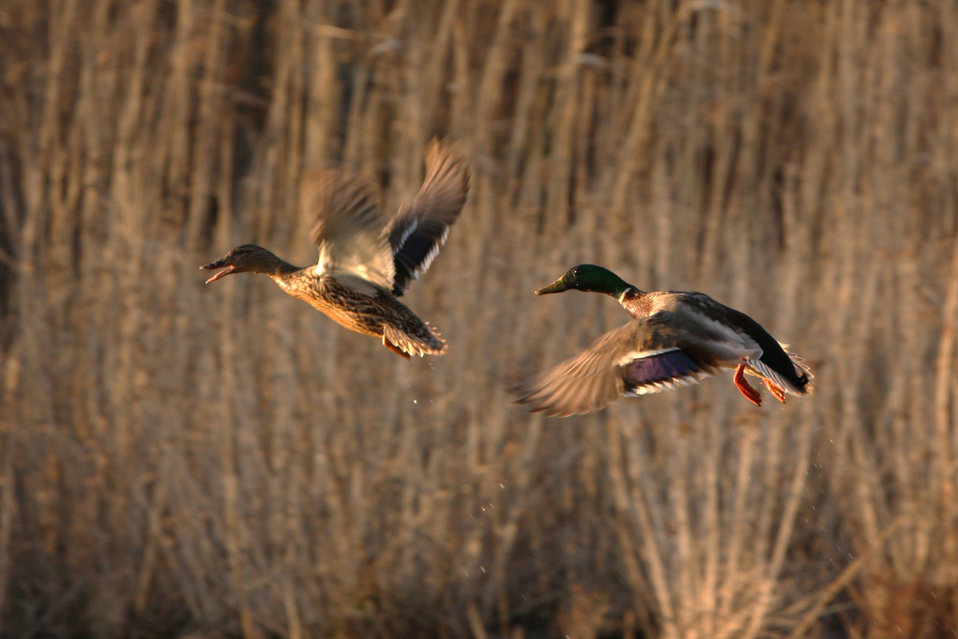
Mallard Pair

Mallard ducks at John Heinz National Wildlife Refuge in Philadelphia, Pennsylvania.